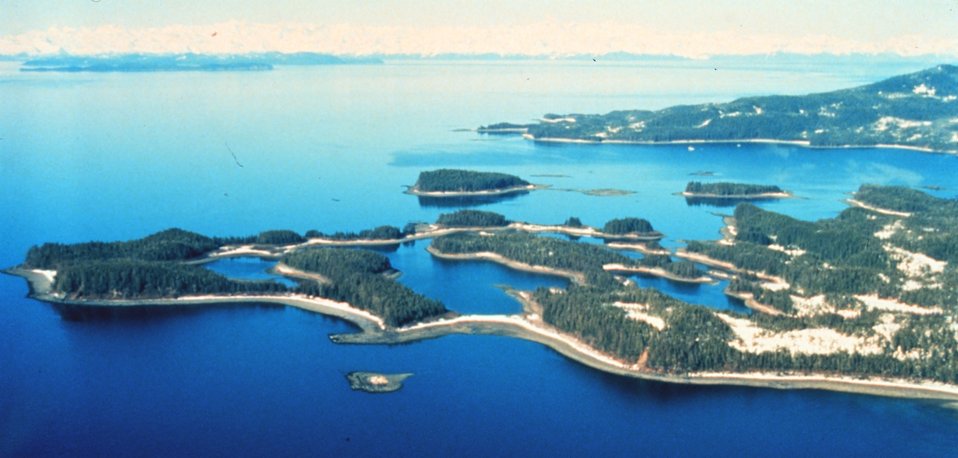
Labyrinthine island with unique appearance from air